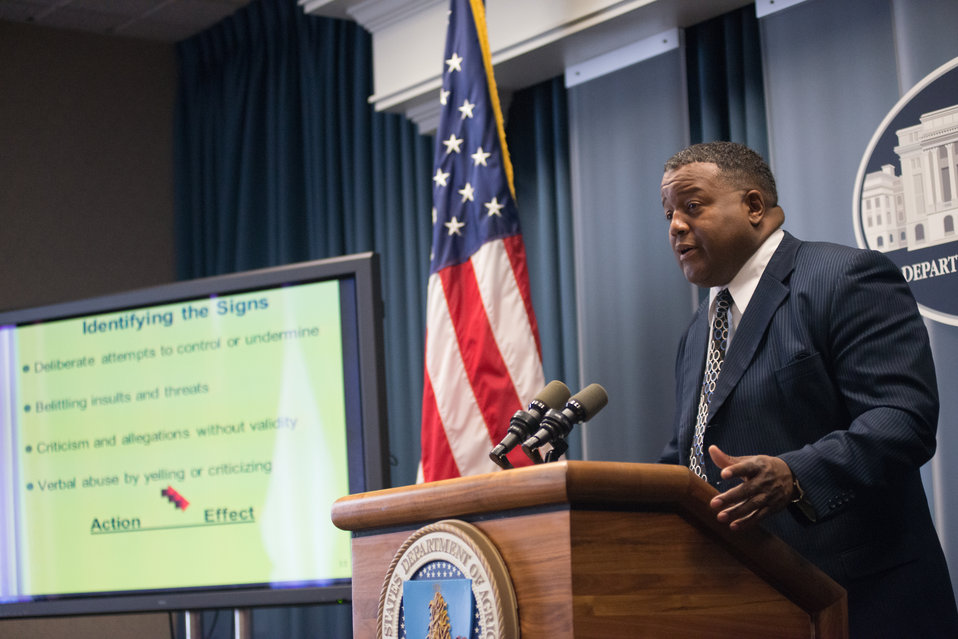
Bureau of Engraving and Printing Alternative Dispute Resolution Steering Committee member and mediator Leonardo Rowe leads the forum on Workplace Bullying during the U.S. Department of Agriculture (USDA) Rural Development’s (RD) 2nd Annual Cultural Transformation kickoff opening ceremony and forums, themed “Employees Influencing Change,” on Tuesday, Aug. 13, 2013 at USDA in Washington, D.C.